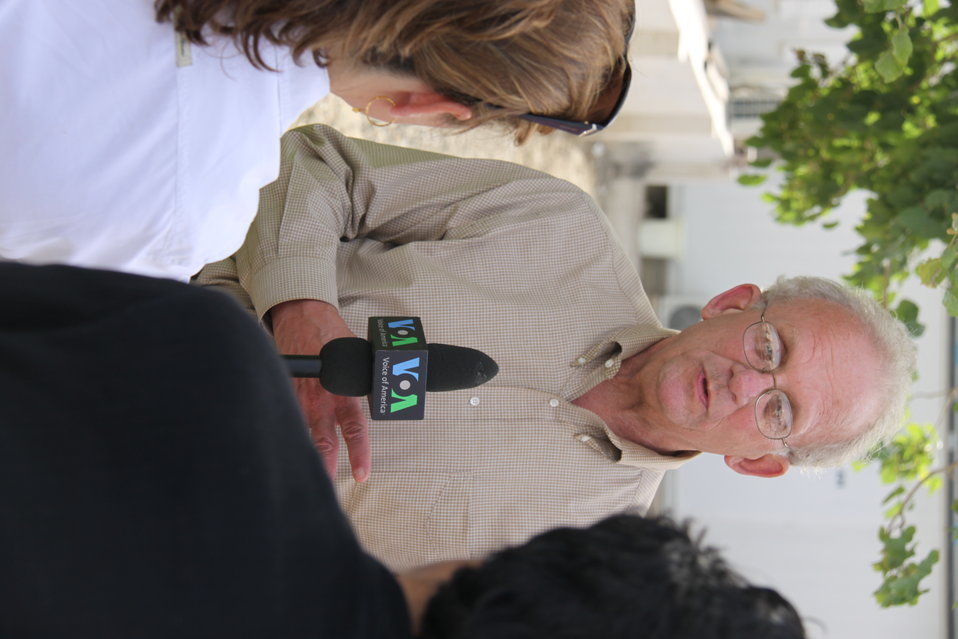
Meeting with Local Leaders in Kandahar